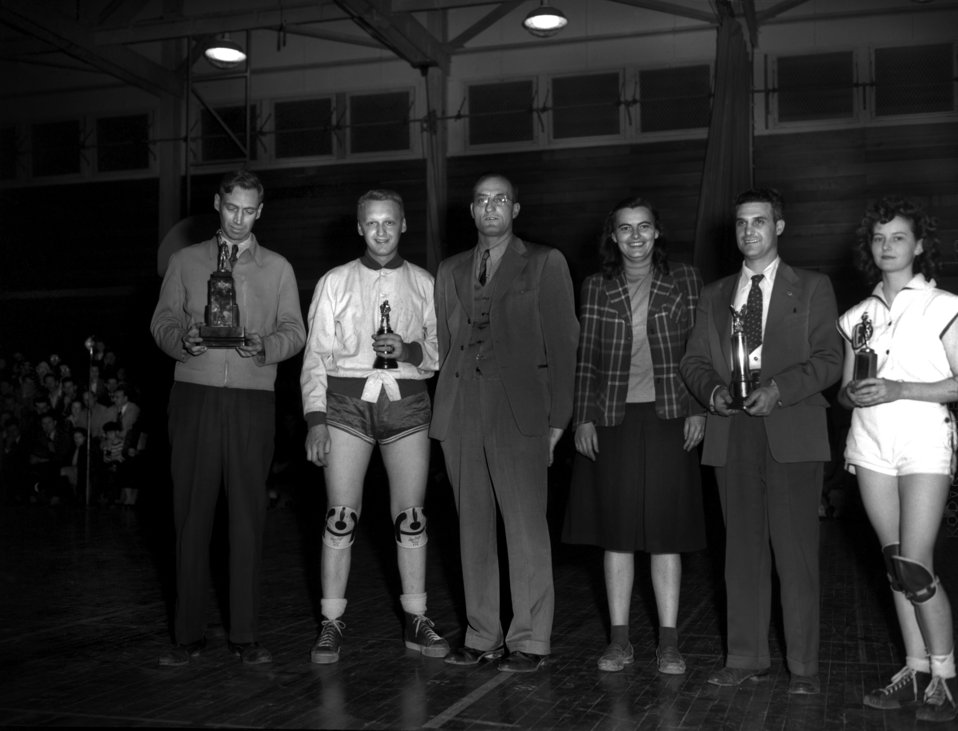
Basketball Trophie Awards Oak Ridge

3352-1 DOE photo Ed Westcott 3-20-1947 Oak Ridge Tennessee